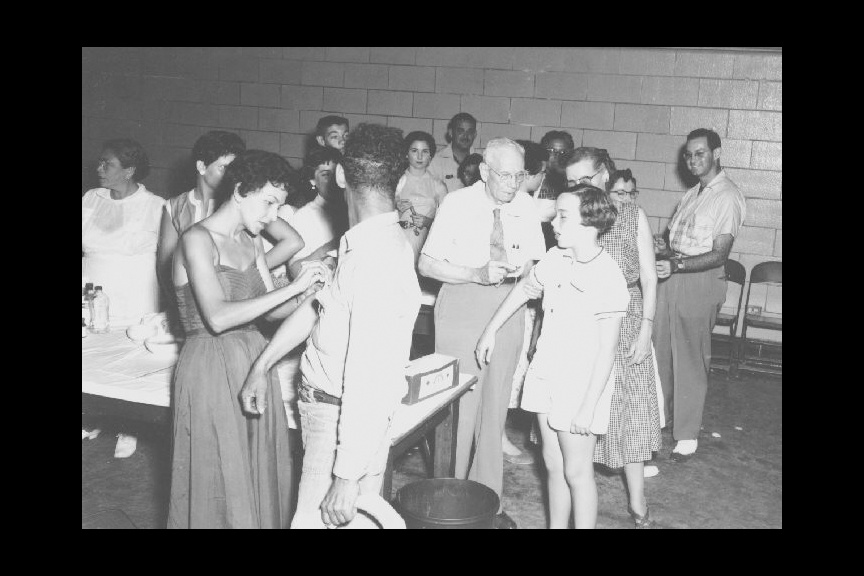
Mass Typhoid Immunization Program in Laredo, Texas.